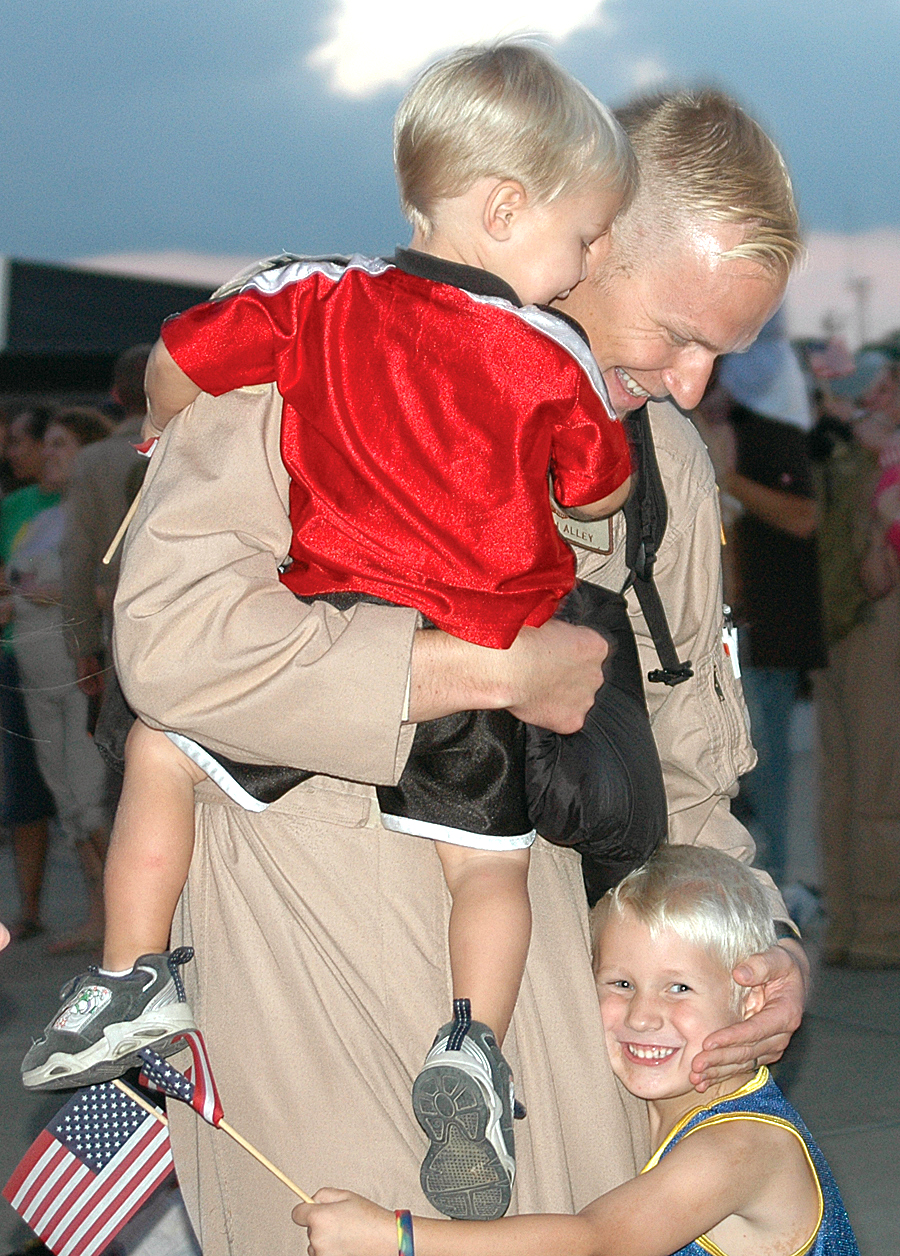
Charleston C-17 squadron completes deployment

Capt. Mitch Alley reunites with his sons, Brett, 2, and Seth, 5, after returning to Charleston Air Force Base, S.C., Sept. 3 from a deployment. Captain Alley is a pilot with the 17th Airlift Squadron.